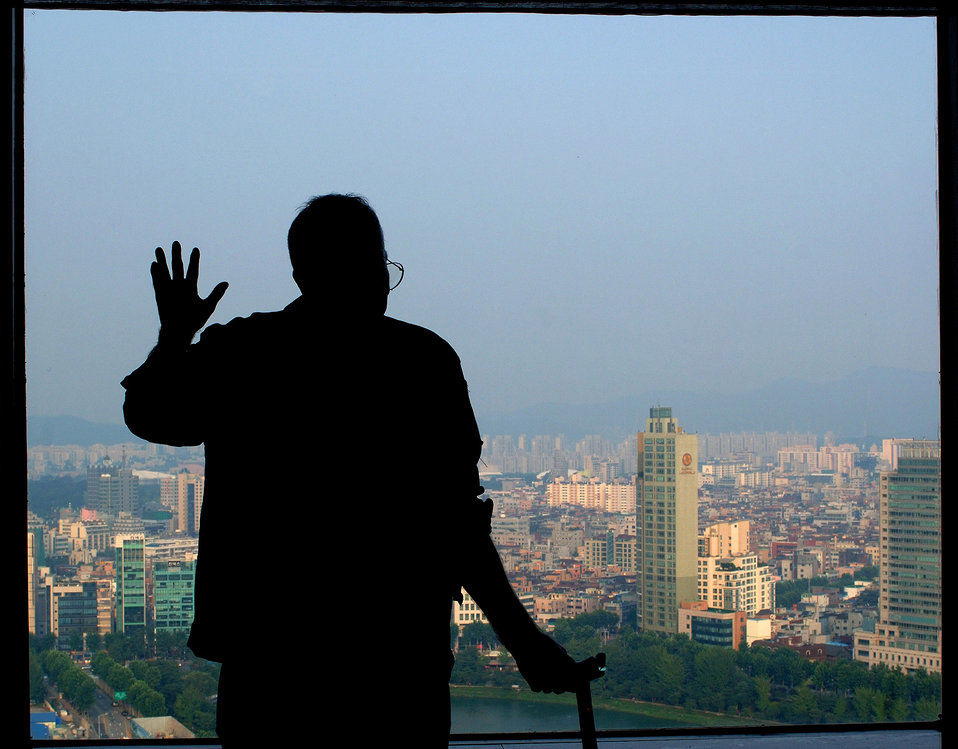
Looking back

Retired Lt. Col. Harold Fischer, a fighter ace with 10 confirmed kills, looks out over the city of Seoul, South Korea, Sept. 10. He is touring South Korea with fellow veterans in observance of the Air Force's 60th anniversary.